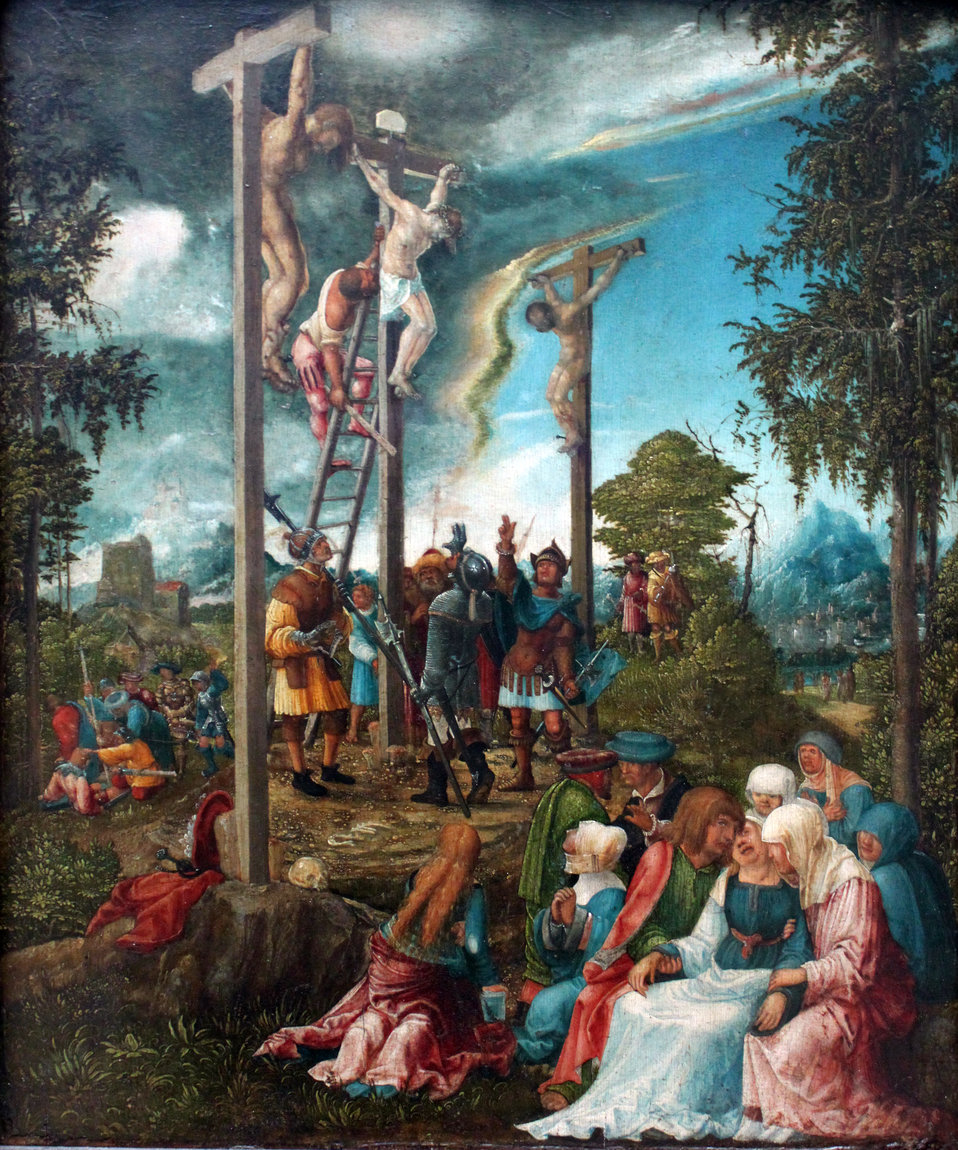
1526 Altdorfer Kalvarienberg anagoria